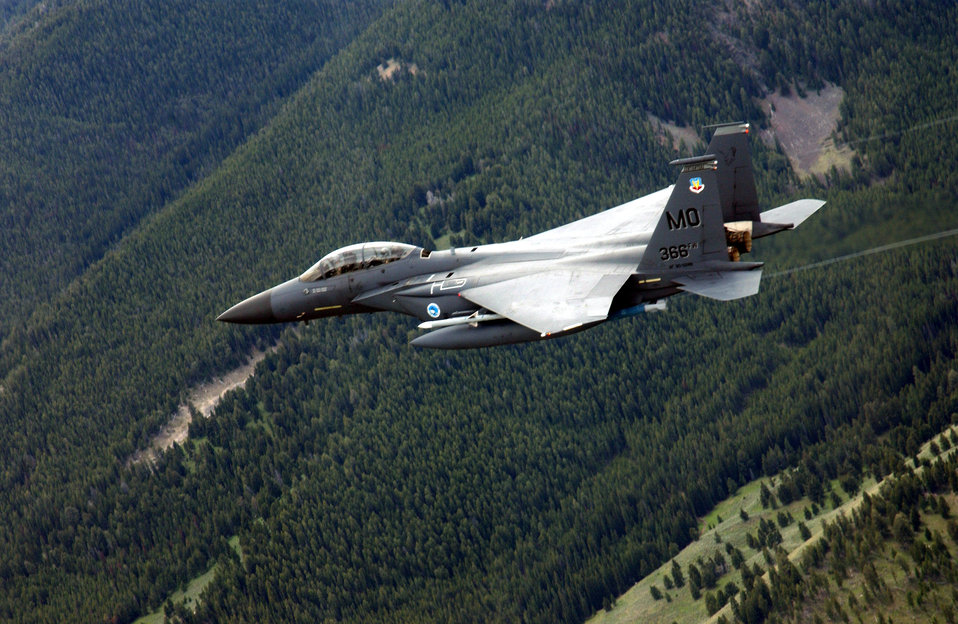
Lone Eagle

MOUNTAIN HOME AIR FORCE BASE, Idaho -- An F-15E Strike Eagle performs a low-level training mission over the Sawtooth Mountain Range. Strike Eagles based here give the 366th Fighter Wing sophisticated air-to-ground attack capabilities and air-to-air superiority.